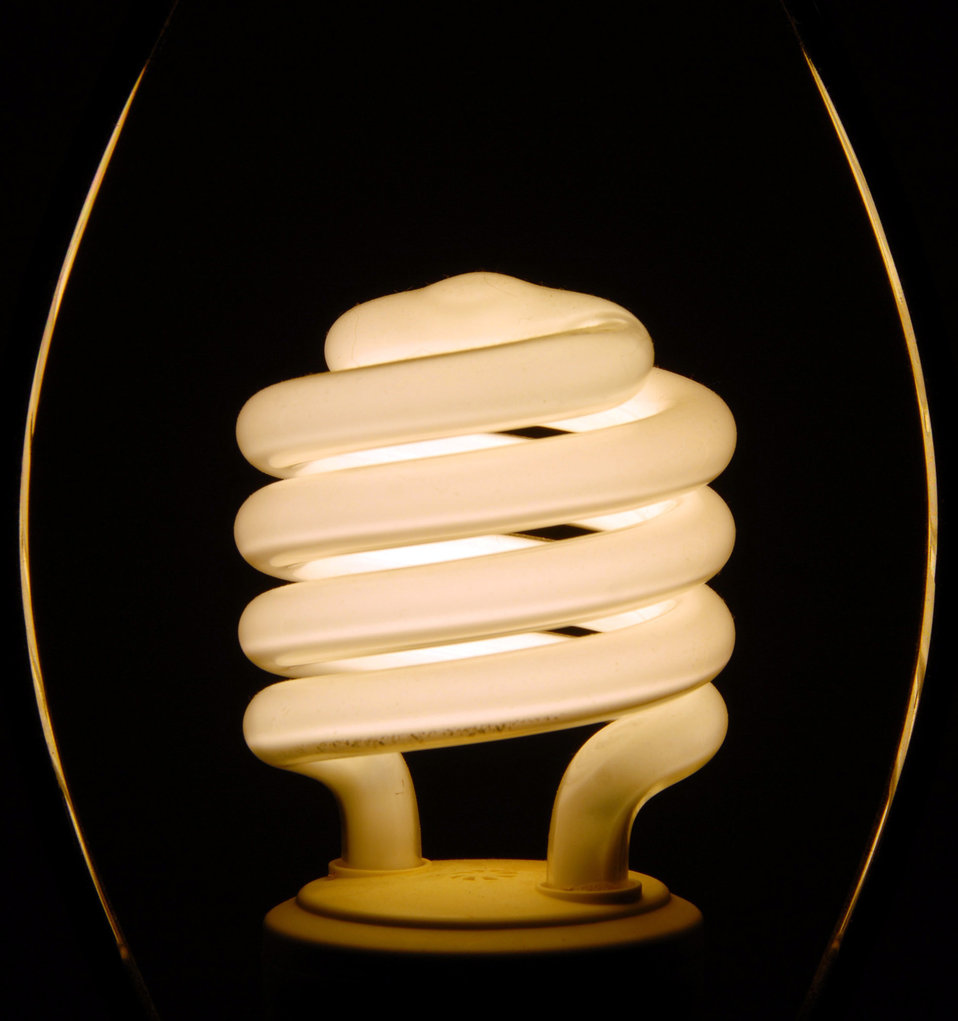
Lajes officials take steps toward solar power

As part of the Air Force renewable energy initiative, 65th Civil Engineer Squadron officials have begun testing solar energy panels in a military family housing unit Feb. 22, 2010. The panels are estimated to save each unit more than $450 annually.